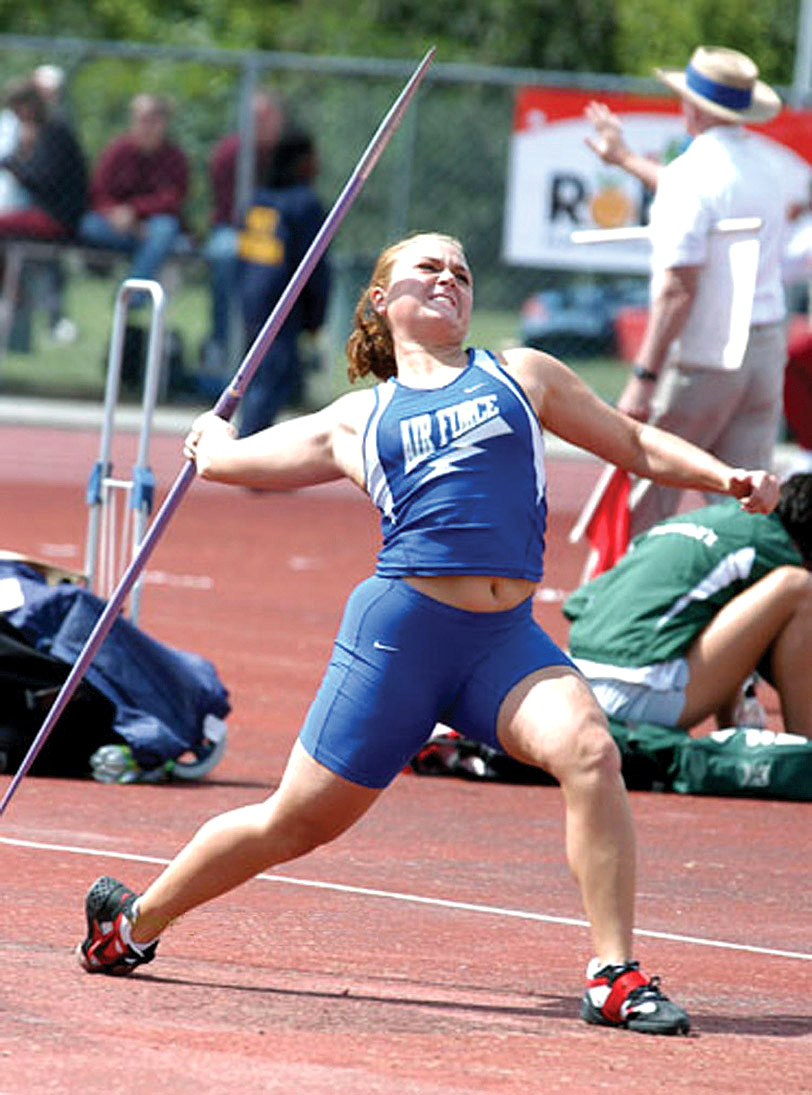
Pounds wins second NCAA javelin title

Dana Pounds successfully defended her javelin title at the NCAA Track and Field Championships in Sacramento, Calif., on June 9. Defeating the runner-up by nearly 12 feet, the Lexington, Ky., native claimed her second national title in as many years.